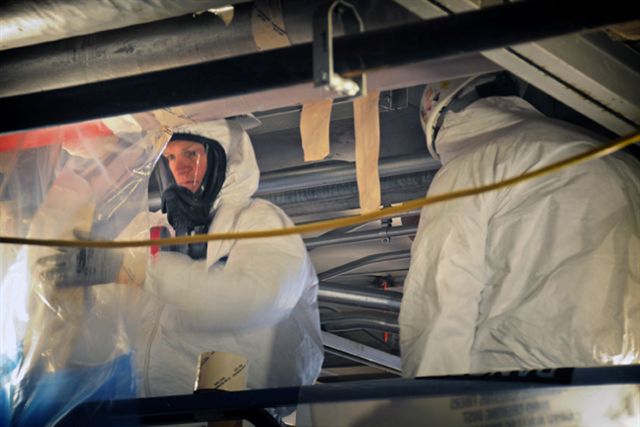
RAN DD INTEC S84 CPP-602 BASEMENT 072610 P6554-43 A